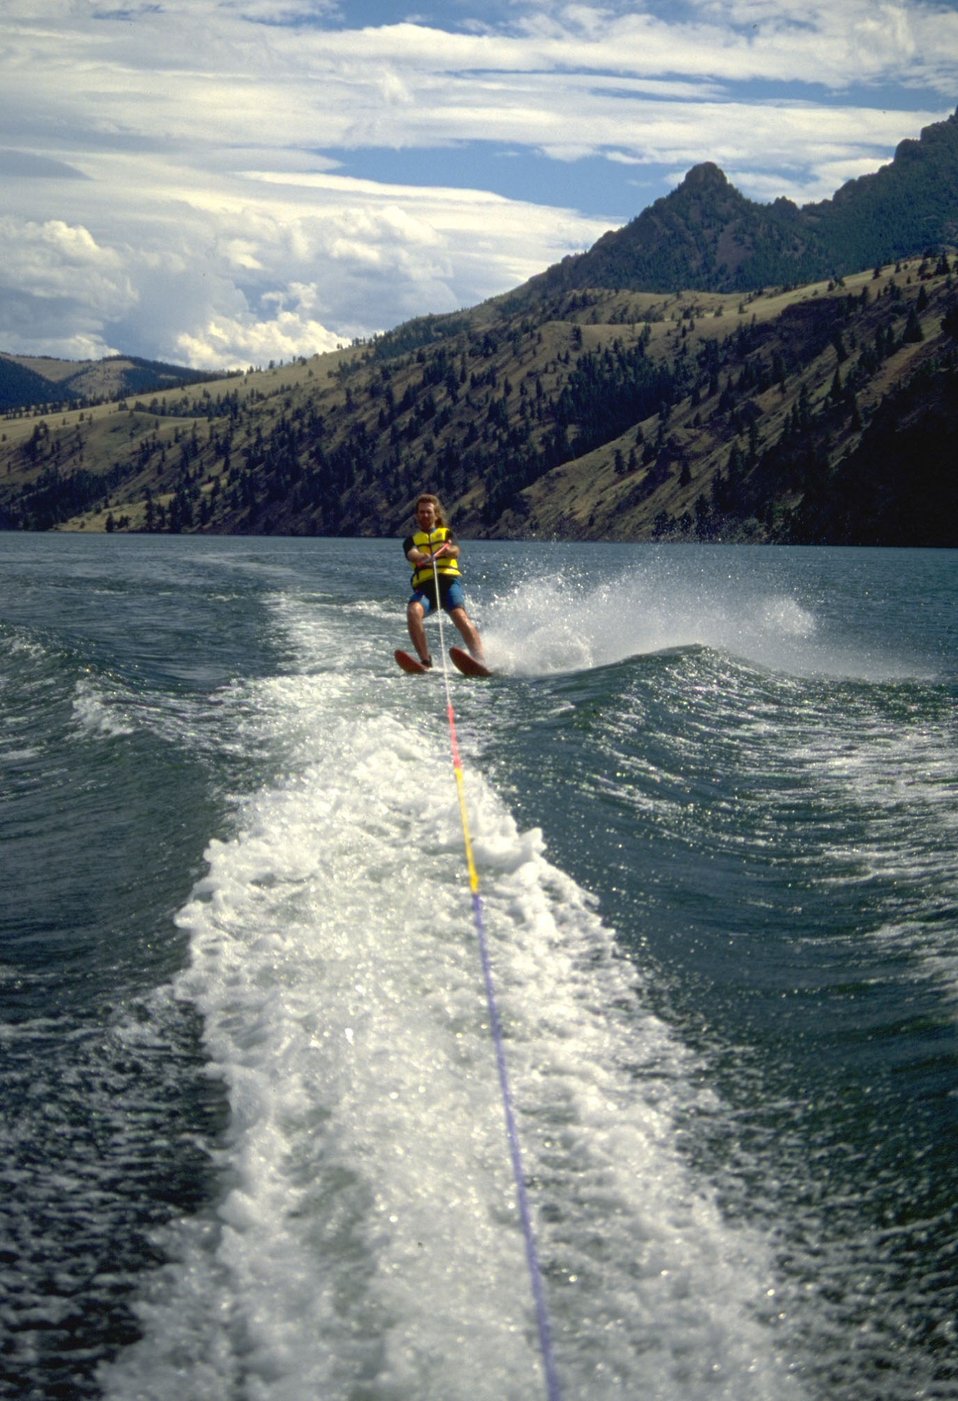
Water skier on lake